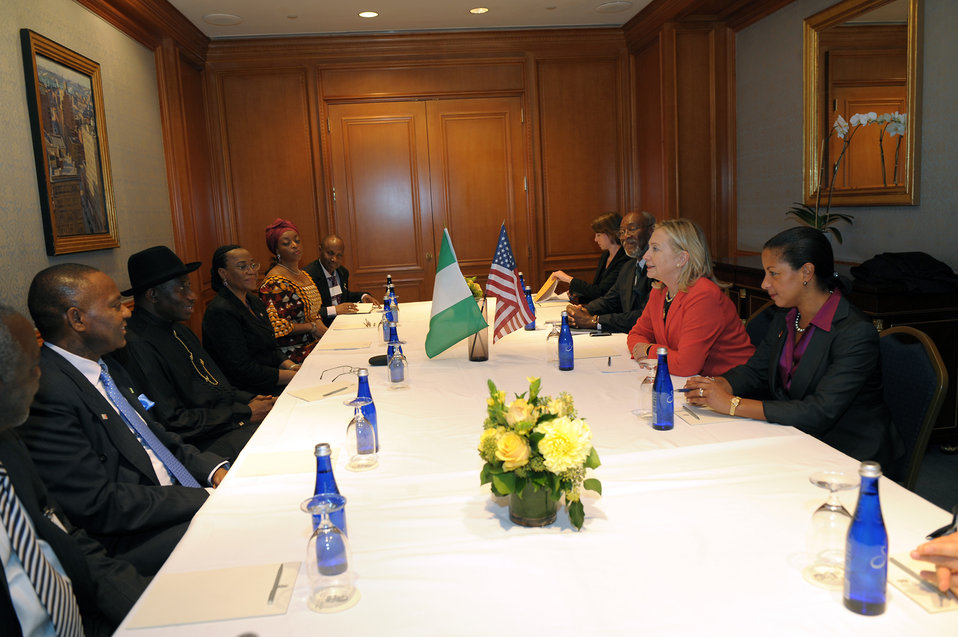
Secretary Clinton Participates Meets With Nigerian President Goodluck Jonathan

U.S. Secretary of State Hillary Rodham Clinton holds a bilateral meeting with Nigerian President Goodluck Jonathan at the at the Ritz-Carlton in New York, New York, on September 20, 2011.